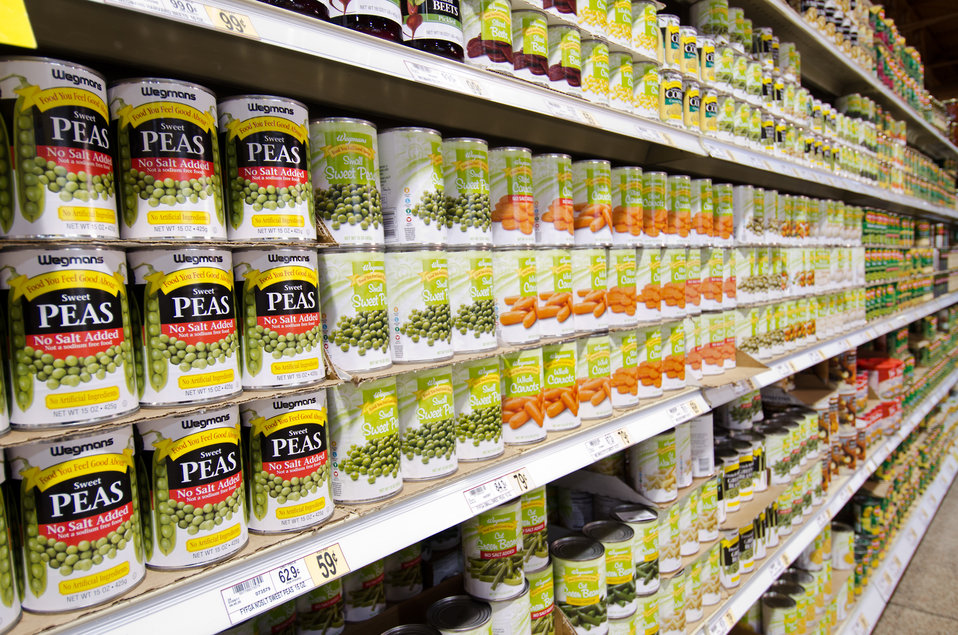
Canned goods at a grocery store in Fairfax, Virginia, on March 3, 2011.